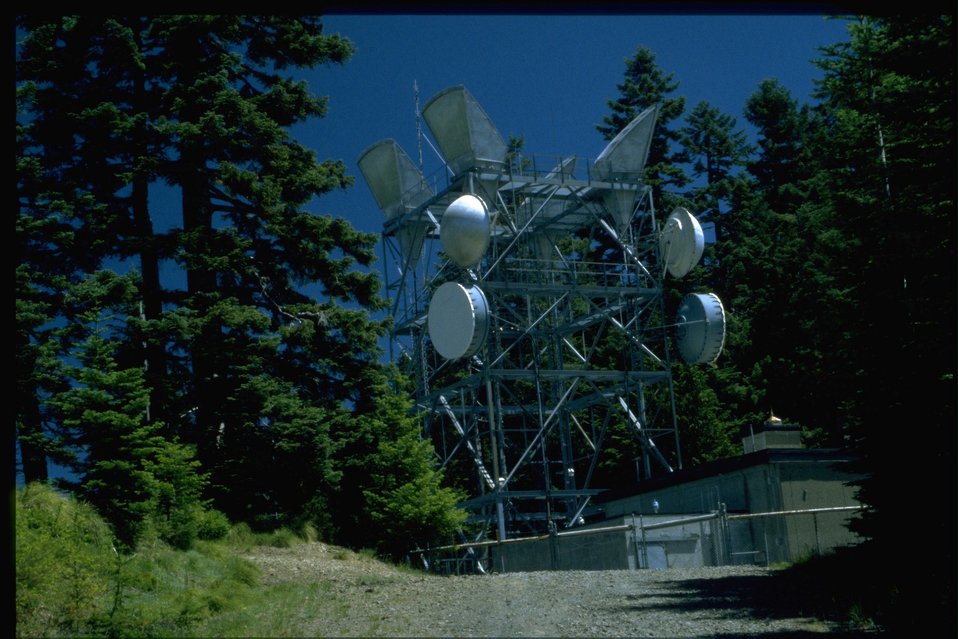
Microwave Relay Station.